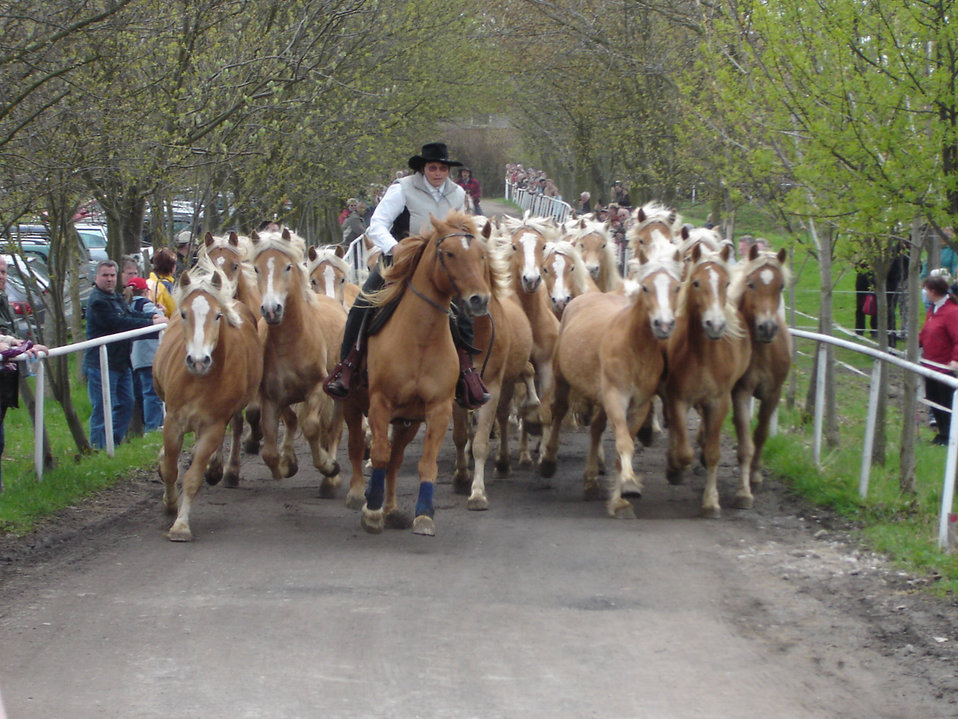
Deutsch: Haflinger-Gestütsparade in Meura, Sommer 2006